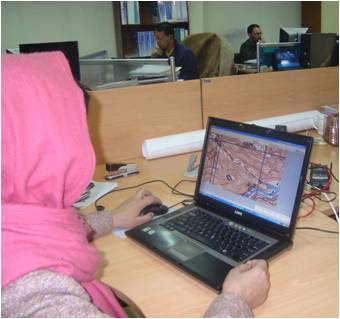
Women Engineers Rebuild Afghanistan

Women are a growing force in the Afghan workplace. To advance the role of women in society, the U.S. Government supports women entering into the science and engineering fields. Female engineers in Afghanistan are strong pioneers who have broken through gender stereotypes to contribute to their country’s development.
Fatima Kohstani is an engineer with USAID’s Afghanistan Infrastructure Rehabilitation Program (AIRP). With a master’s degree in roads engineering from Kabul Polytechnic University, she has helped to design urban, rural, and provincial roads.
“This is a male dominated profession,” said her supervisor. “To find an Afghan woman who is an engineer with a master’s degree in engineering is a real credit to her.”
Fatima liked math and science as a student and her father and uncle, both engineers, encouraged her. Now a mother herself with children following her example, she is quick to stress the teamwork aspect of engineering. A good road, she says, results from the expertise of many engineers – from surveyors to geometric designers.
Mrs. Kohstani’s specialty is hydraulic engineering. She gauges water flows and run-offs to properly design road structures like curbs, medians, culverts, and bridges. Feeding data from topographical studies and survey teams into advanced software programs, she creates maps and models that show where concrete structures are needed.
Her current area of responsibility is the Bamyan-Dushi Road, a 164-kilometer route that will provide a year-round alternative to the treacherous Salang Pass. She estimates that the route will need 860 culverts to maintain water flow and prevent flooding.
As an Afghan, Mrs. Kohstani brings a special commitment to the rebuilding of her country. “When I am on the Bamyan-Dushi Road,” she said, “I know that I built that road, that I was part of it. When I see vehicles and people using the road, I feel very good.” Her motivation, she says, is simple: “I work for my people.”